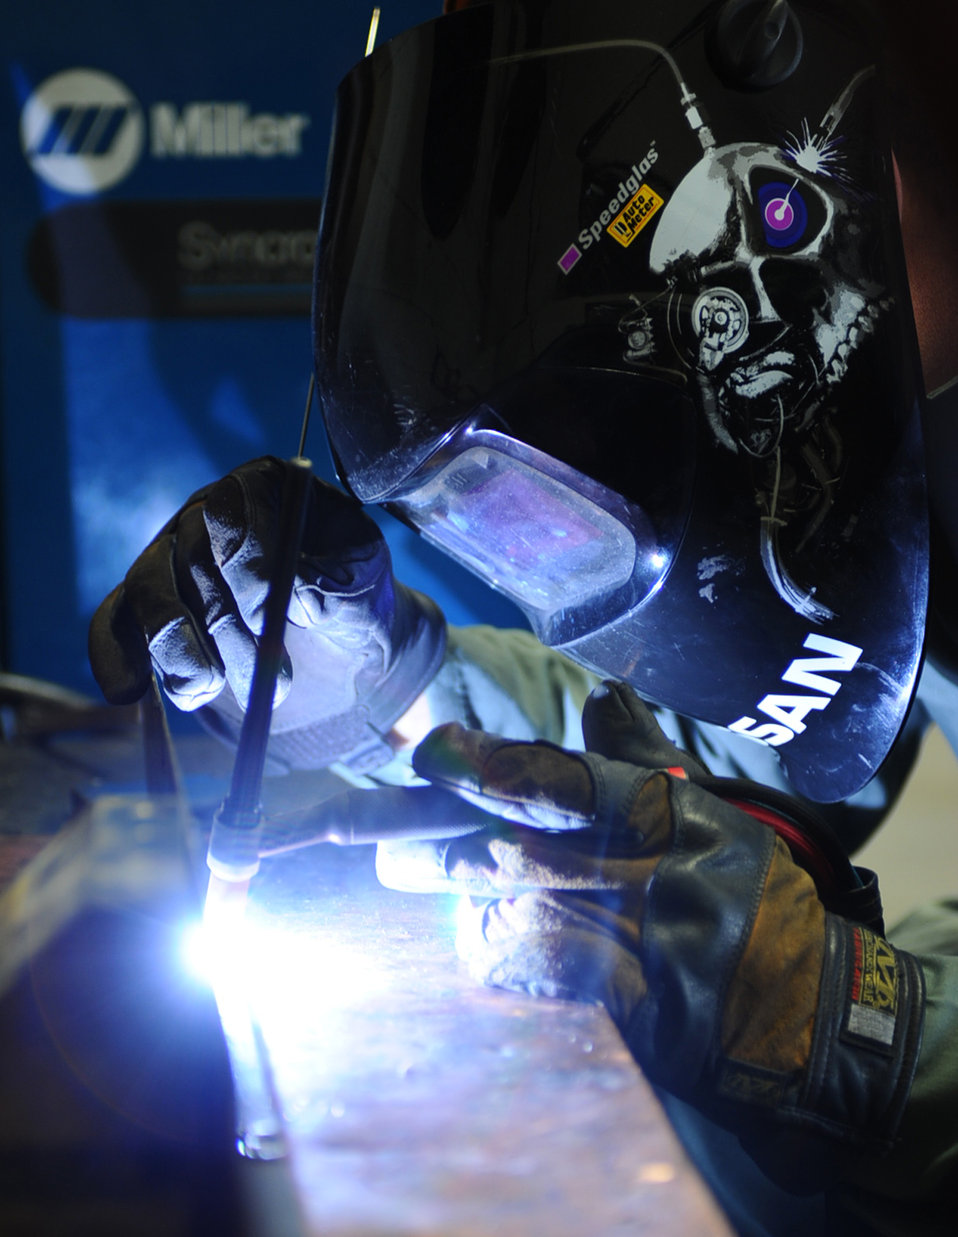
Tungsten inert-gas welding

Airman 1st Class Webb Travis performs tungsten inert-gas welding while repairing a bomb loader panel Jan. 26, 2011, at Ellsworth Air Force Base, S.D. Airman Travis is an aircraft metals technology technician assigned to the 28th Maintenance Squadron.